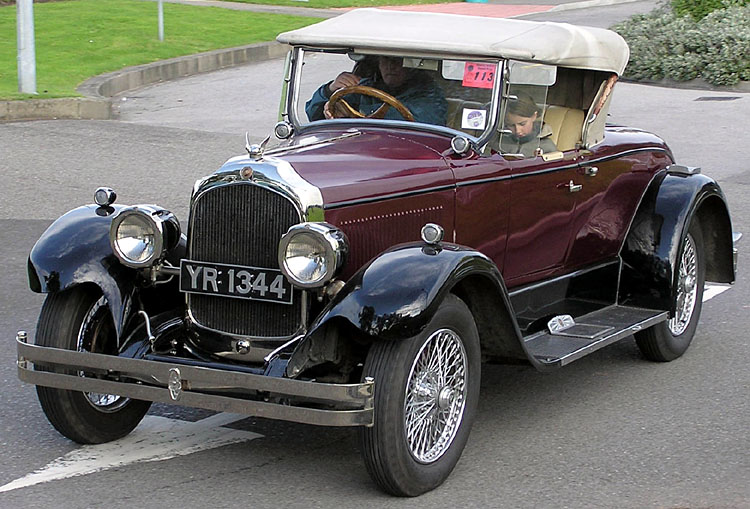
1926 Chrysler Imperial Roadster at the Great West Road Run rally at Aust Services, Aust, Bristol, England.